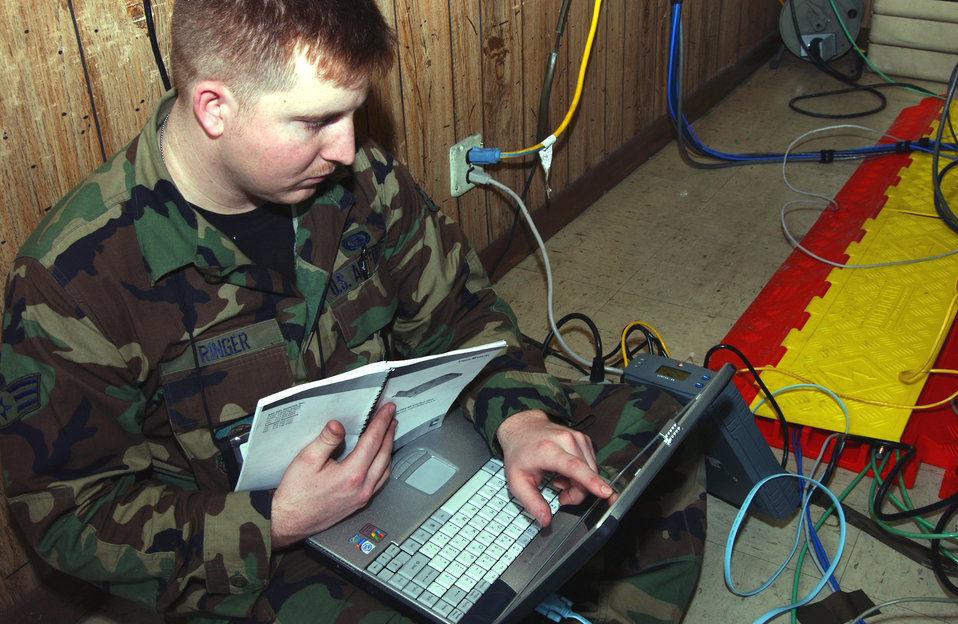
Crisis Reach

GULFPORT, Miss. -- Senior Airman Robert Ringer troubleshoots a